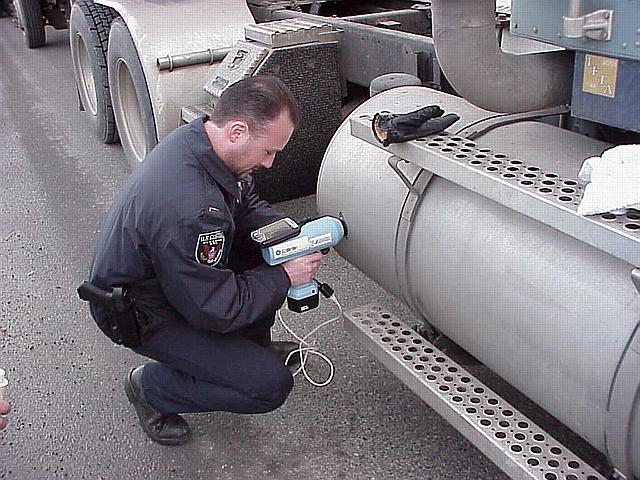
Scientists at Pacific Northwest National Laboratory have developed the Ultrasonic Pulse Echo, a hand-held gun that transmits ultrasonic pulse and detects return echoes to determine the contents of sealed containers. The device is used in field exercises for a Pacific Northwest National Laboratory's border security training program.